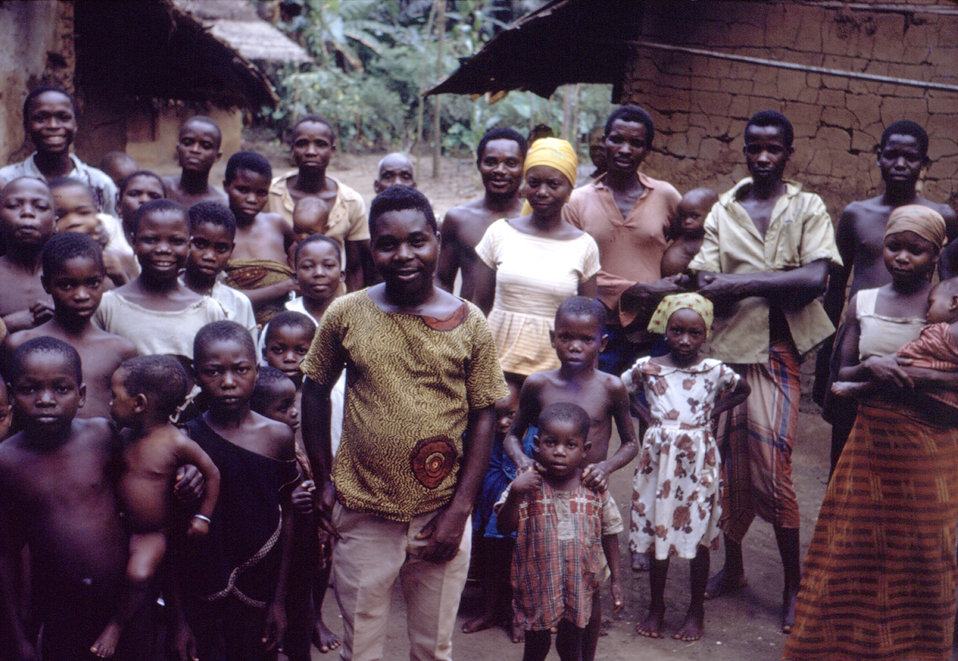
These Nigerian refugees are shown waiting for food rations at a relief camp in Port Harcourt, Nigeria during the Nigerian-Biafran civil war.